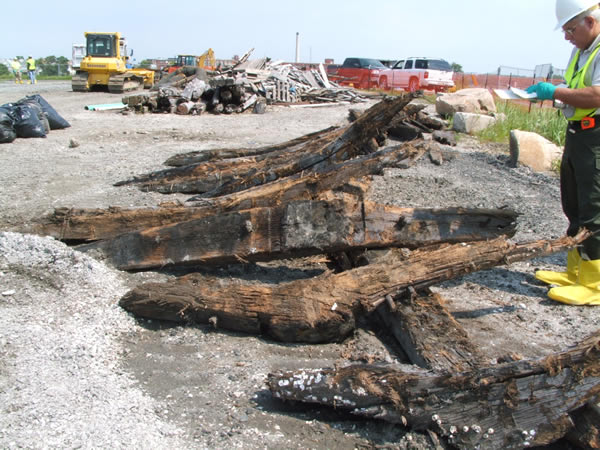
August 2009, Sunken treasure?

Sometimes the debris removal operations brings up more than old tires...

Here, a Massachusetts state archeaologist documents pieces of a colonial shipwreck found during debris removal operations in the summer of 2009.